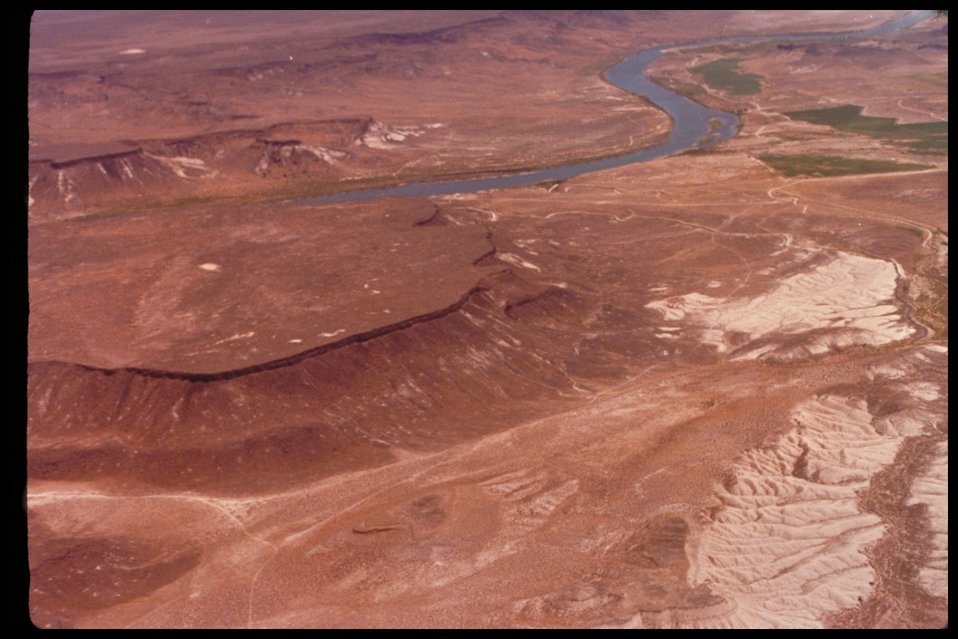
Oregon Trail near Wildhorse Butte Lower Snake River District